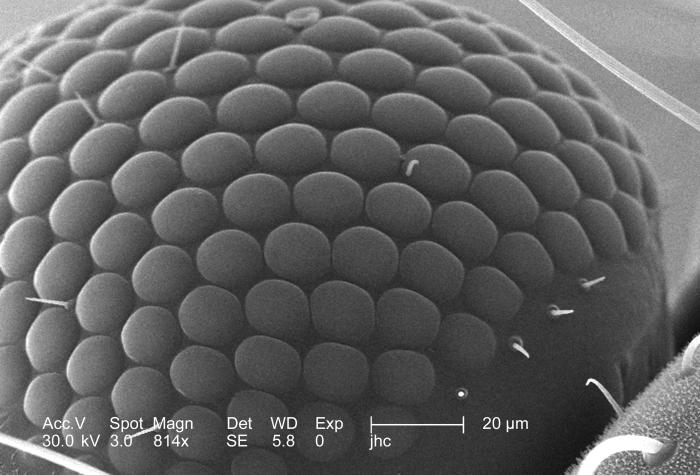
At a magnification of 814x, this scanning electron micrograph (SEM) depicted the compound eye on the head of an unidentified green-colored bug found deceased on the suburban grounds in Decatur, Georgia. The compound eye is composed of numerous repetitive light-sensitive subunits known as "ommatidia" (pl. of ommatidium), which themselves are comprised of photo-receptive cells arranged in a cluster, surrounded by their own supportive, and pigment cells. The environmental surface of each ommatidium is covered by a transparent "cornea" as is the case in the human eye.